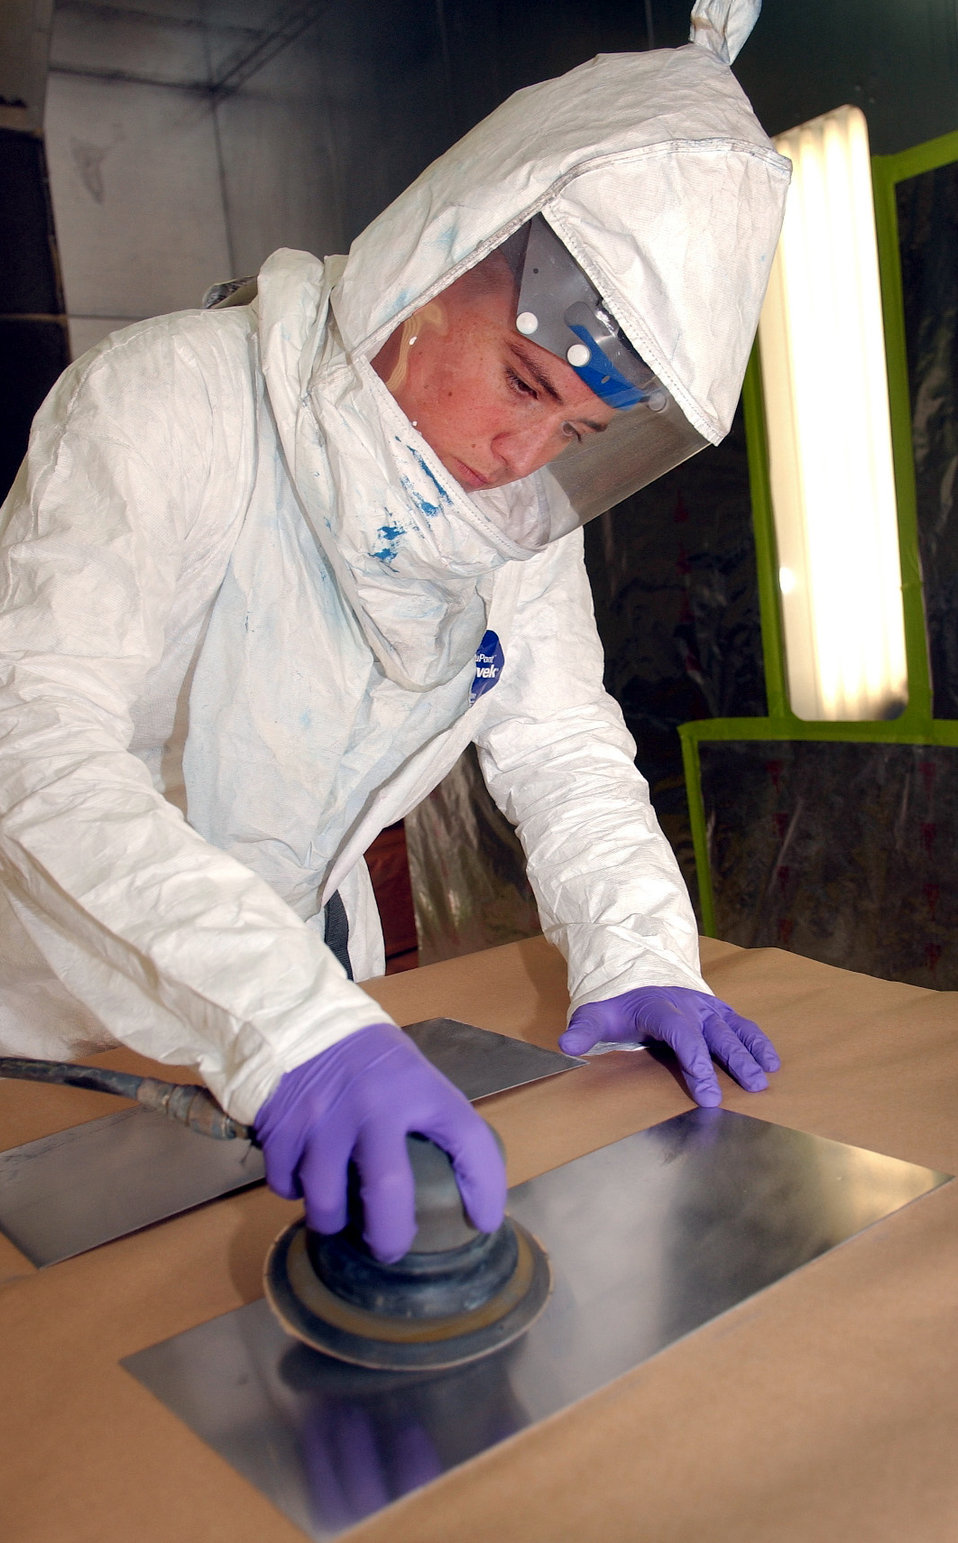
Sand down

OPERATION IRAQI FREEDOM -- Airman 1st Class John Baumann sands down a sheet of metal at a forward-deployed location in Iraq on May 10. Airman Baumann is a sheet metal Airman with the 379th Expeditionary Maintenance Squadron.